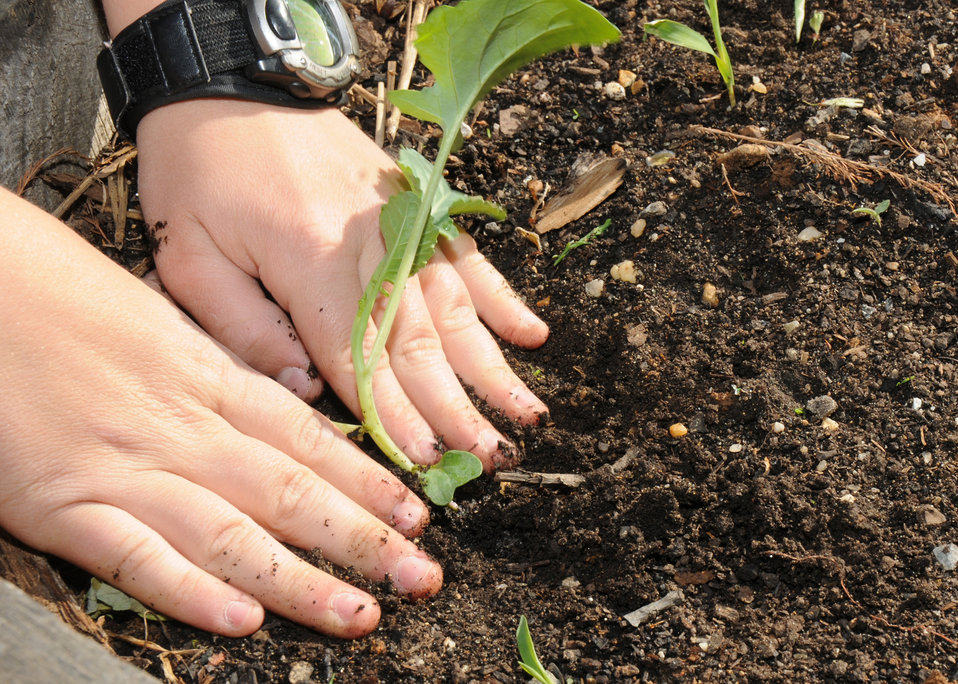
The son of a U.S. Department of Agriculture (USDA) employee plants vegetables at the People’s Garden on Friday, Apr. 9, 2010. USDA photo 10di1300-58